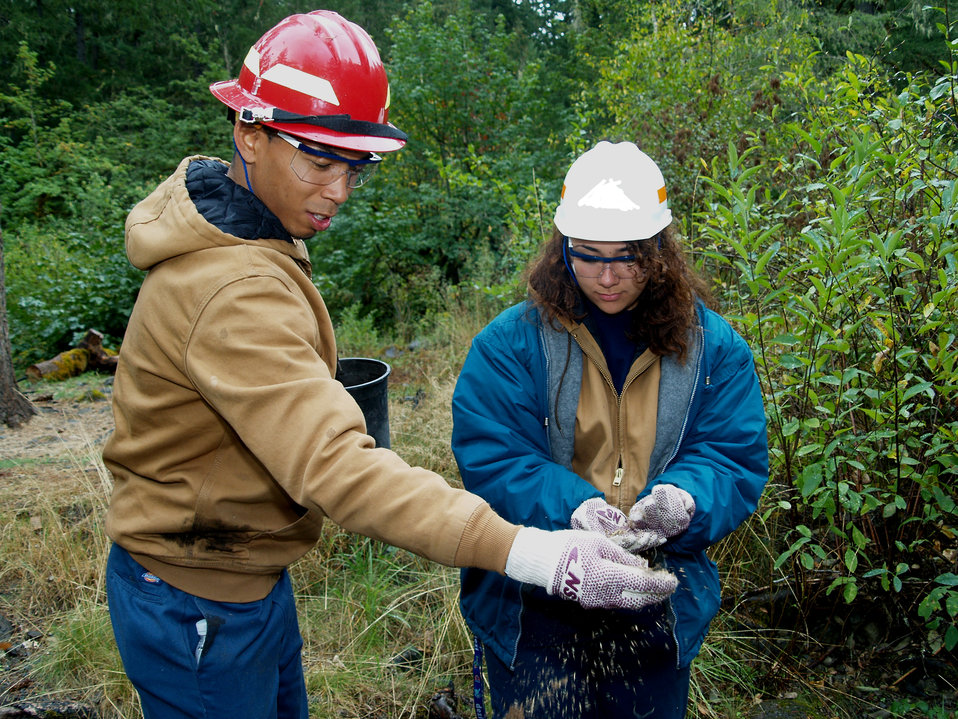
September 29, 2009. Estacada, OR. Timber Lake Job Corps Center students Ariel Scrogham (r) and Paul Miles (l) spread seeds during a streamside restoration project on the Clackamas River. The project enhances the spawning areas of native salmon on the river.